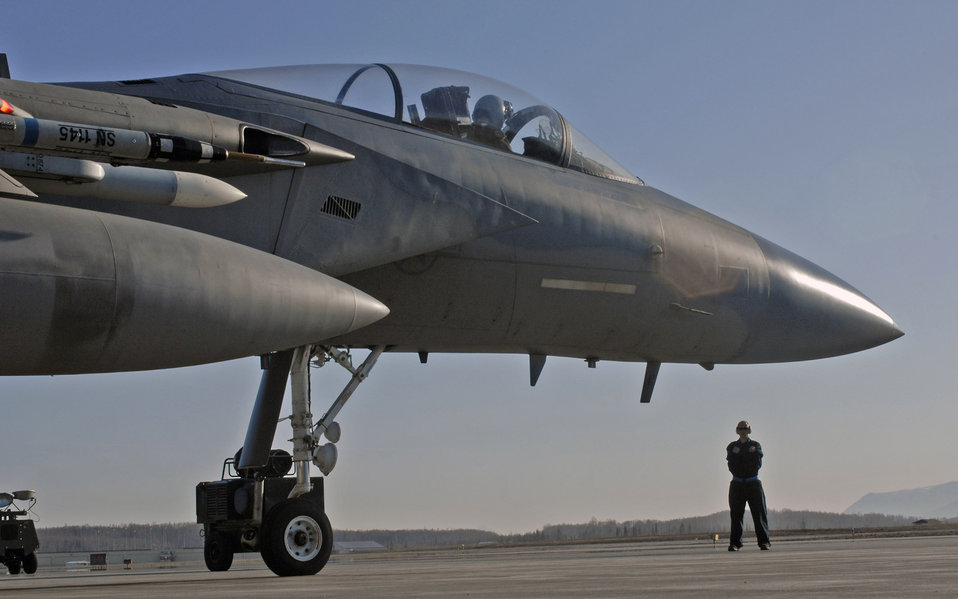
Red Flag-Alaska ends

An F-15 Eagle maintainer waits to flag a fighter participating during Red Flag-Alaska 2009 April 30 at Elmendorf Air Force Base, Alaska. This exercise enabled flying squadrons to enhance their fighting capabilities in simulated combat sorties in a realistic threat environment. The 10-day exercise ended May 1.